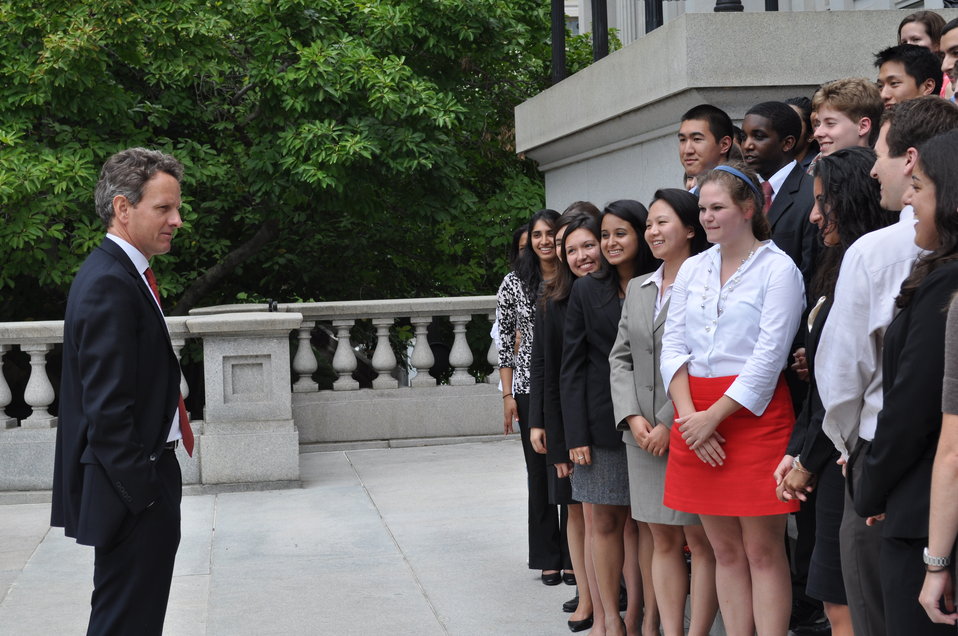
Secretary Geithner speaks to Summer 2012 interns